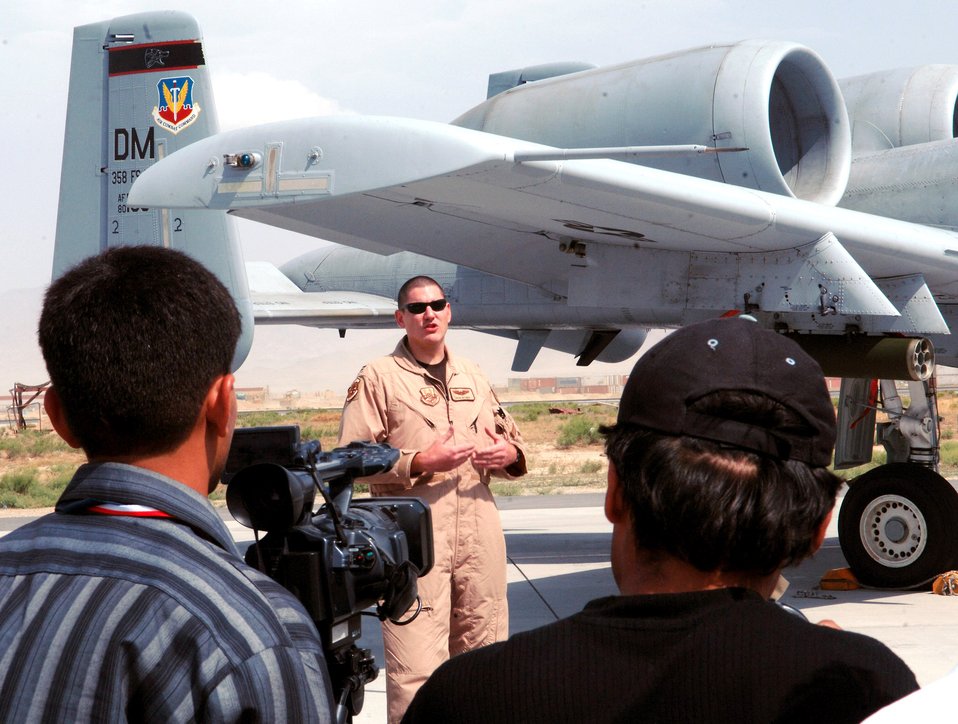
Afghan media get up-close view of Bagram Air Base

Capt. Doug Witmer, a 354th Expeditionary Fighter Squadron A-10 Thunderbolt II pilot, explains his job May 29 as a pilot and the role his A-10 plays in the close-air-support mission at Bagram Air Base, Afghanistan. Captain Witmer was one of several Airmen involved in a media event involving several local Afghan media aimed at informing them on the operations at Bagram and how the U.S. military is working alongside coalition partners to support and defend freedom in Afghanistan.